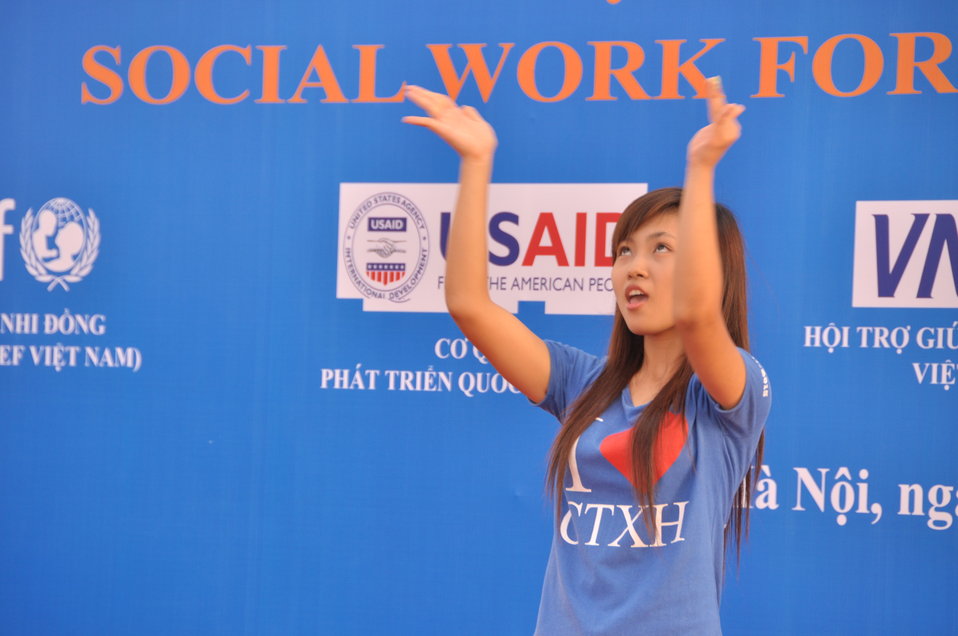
USAID Supports Social Work Education

Photo: @USAIDVietnam, November 9, 2012